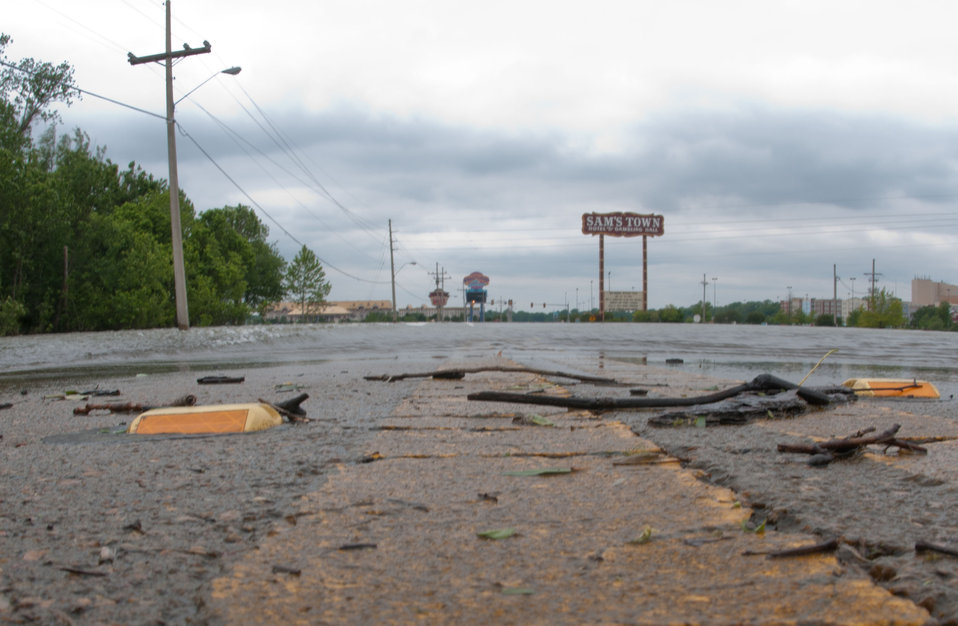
Floods waters from Mississippi River inundated casinos and farms that surround Tunica, MS, on Sunday, May 15. 2011.